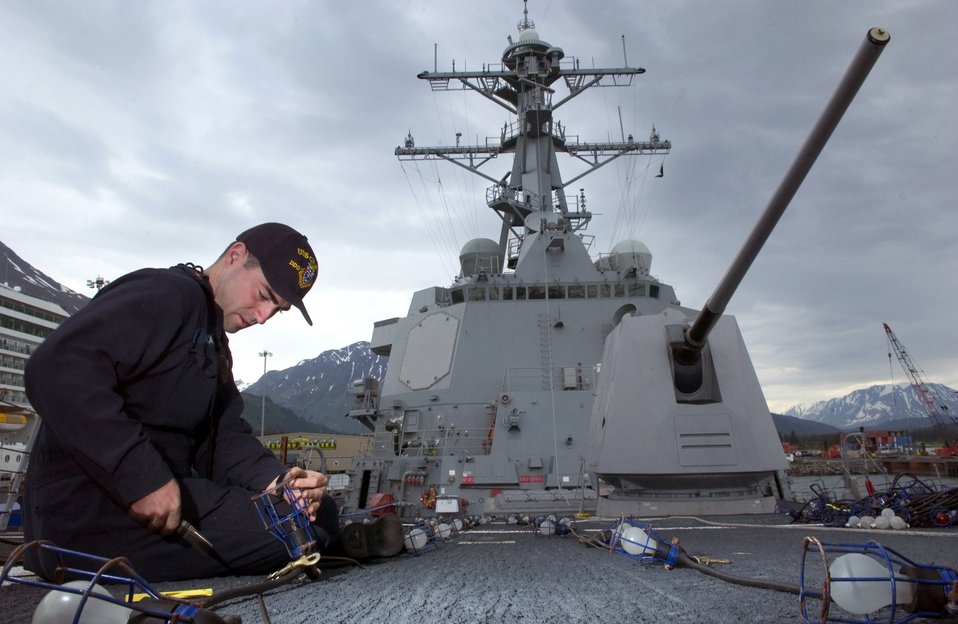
Northern Edge aims for air, sea dominance

Petty Officer 2nd Class Anthony Lucas, an electrician's mate on the USS Chafee, repairs a light on the ship after it docked Saturday, June 3, 2006, in Seward, Alaska. The destroyer was participating in Exercise Northern Edge 2006. The joint training exercise, which runs from June 5 to 16 and is hosted by Alaskan Command, is one of a series of U.S. Pacific Command exercises that prepare joint forces to respond to crises in the Asian Pacific region.